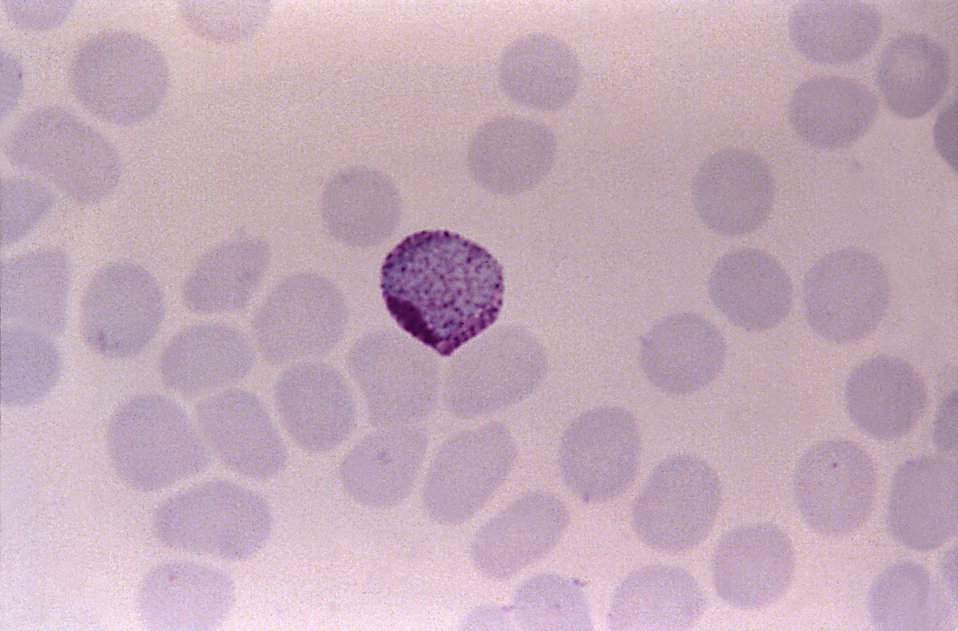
This thin film micrograph revealed a Plasmodium vivax macrogametocyte with distinct Schufner's dots; Mag. 1125X.